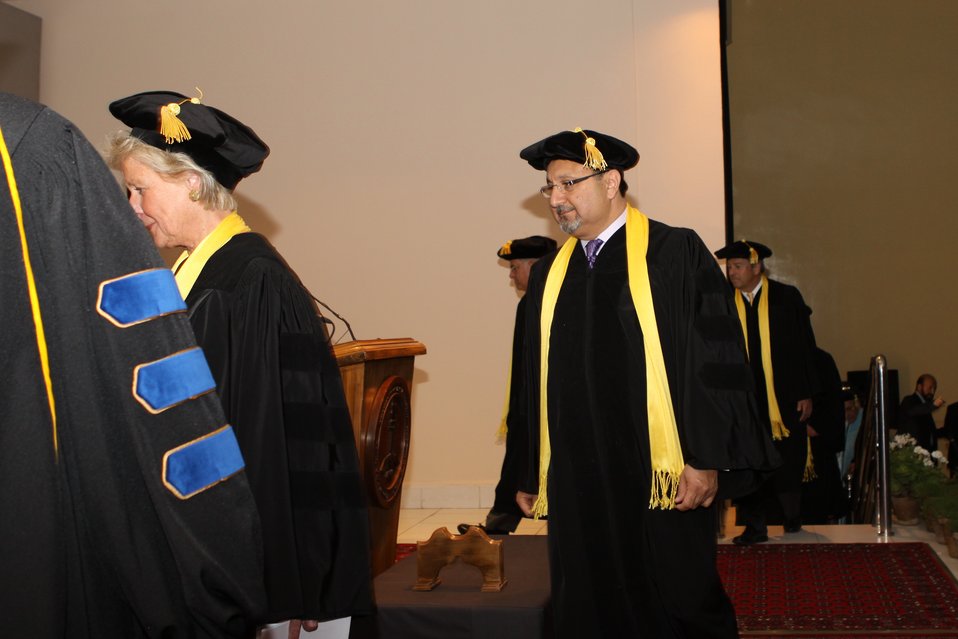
100526 AUAF Graduation 118